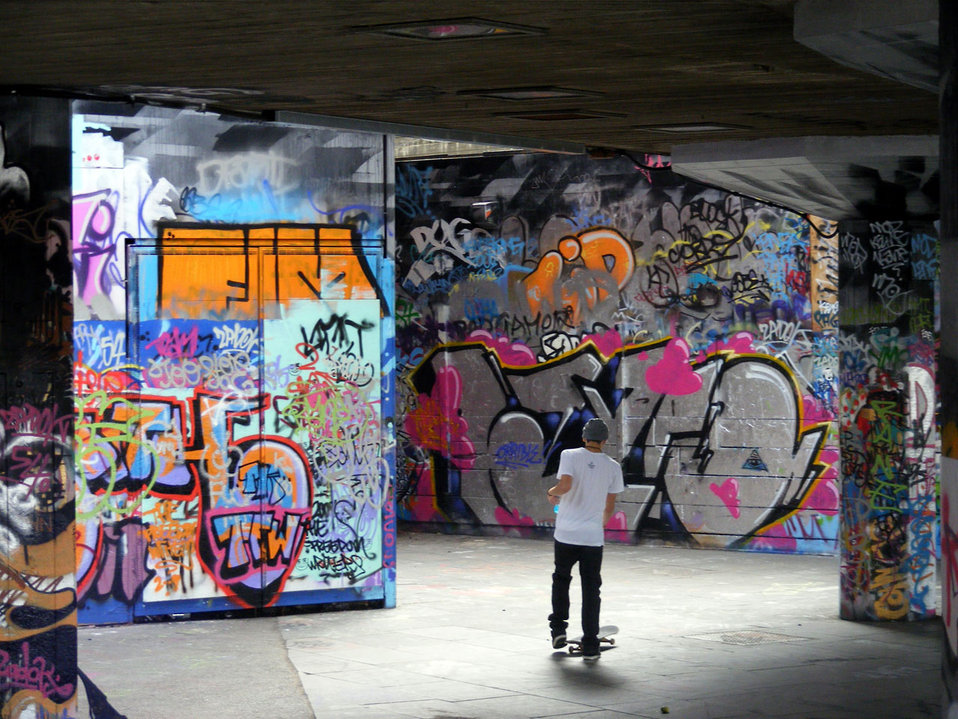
Graffiti

Subway graffiti in london.